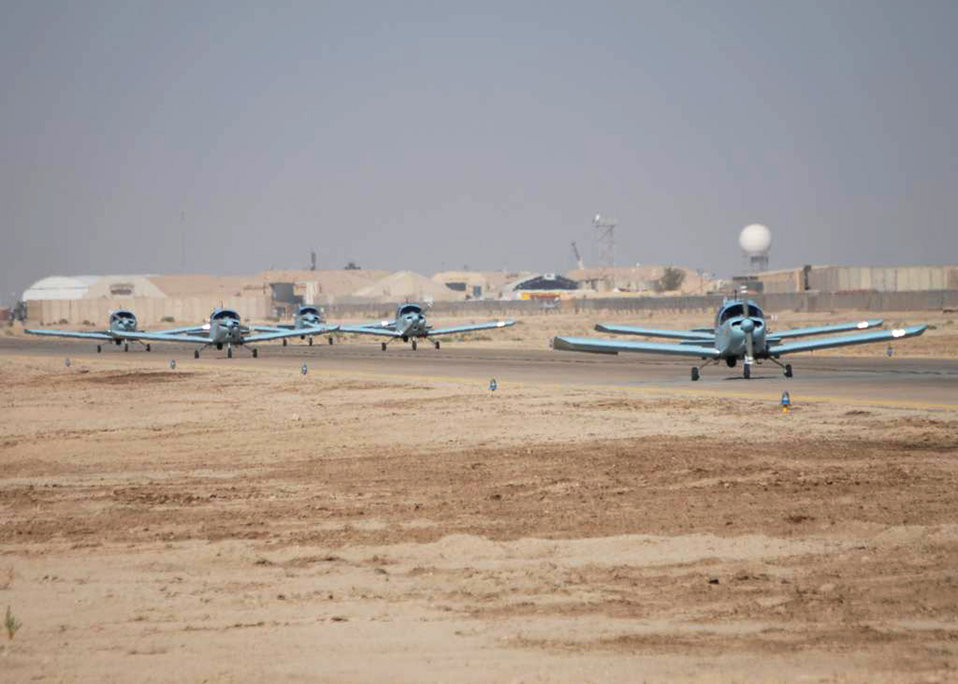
Iraqi Squadron 70

Iraqi air force CH-2000s arrive Oct. 17, 2010, at Ali Air Base, Iraq, after being transferred from Basrah Air Base by the Iraqi Ministry of Defense.